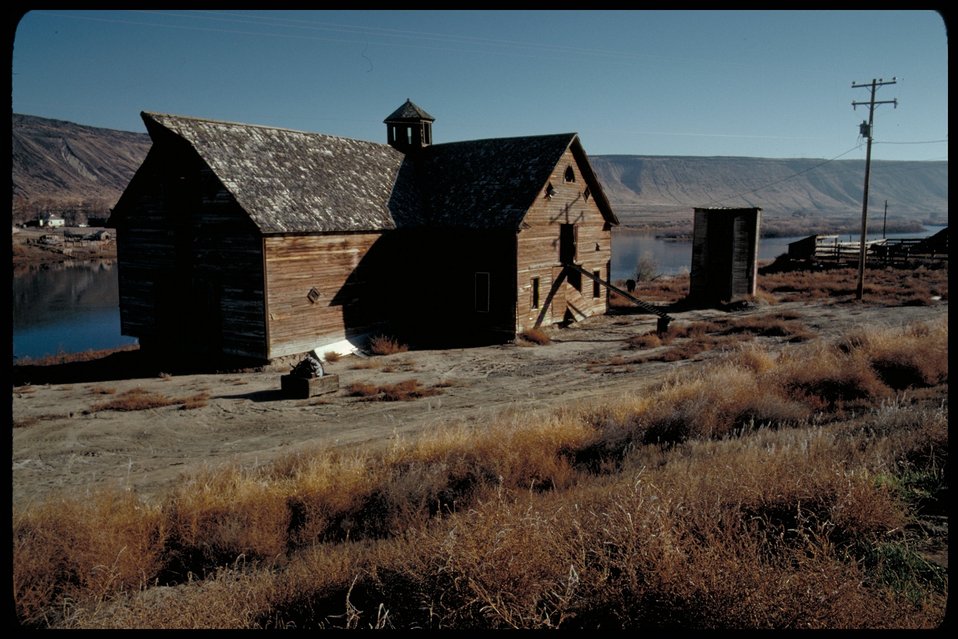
Oregon Trail Banard Ferry Lower Snake River District